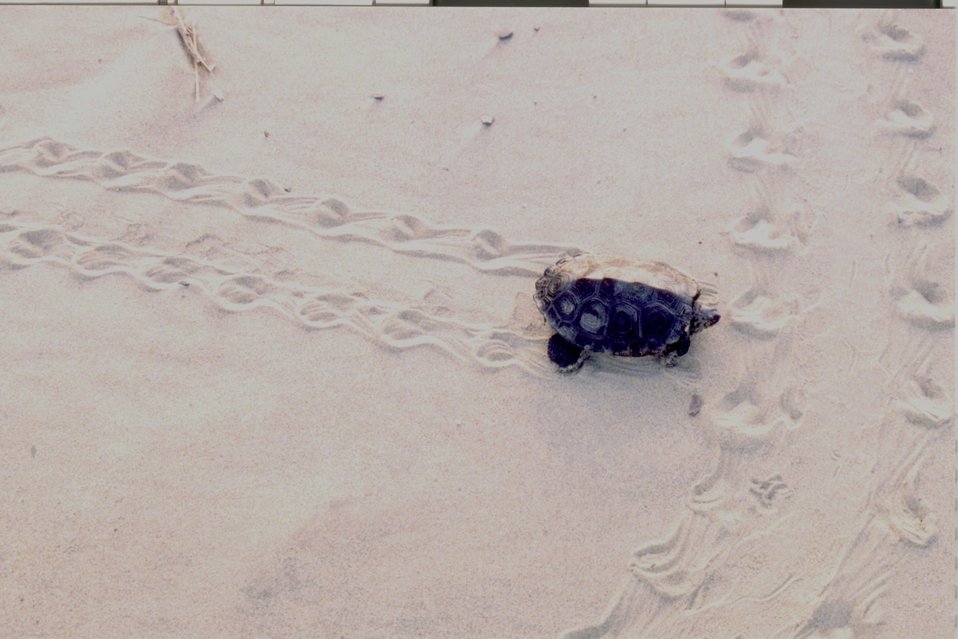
Terrapin making tracks in the sand